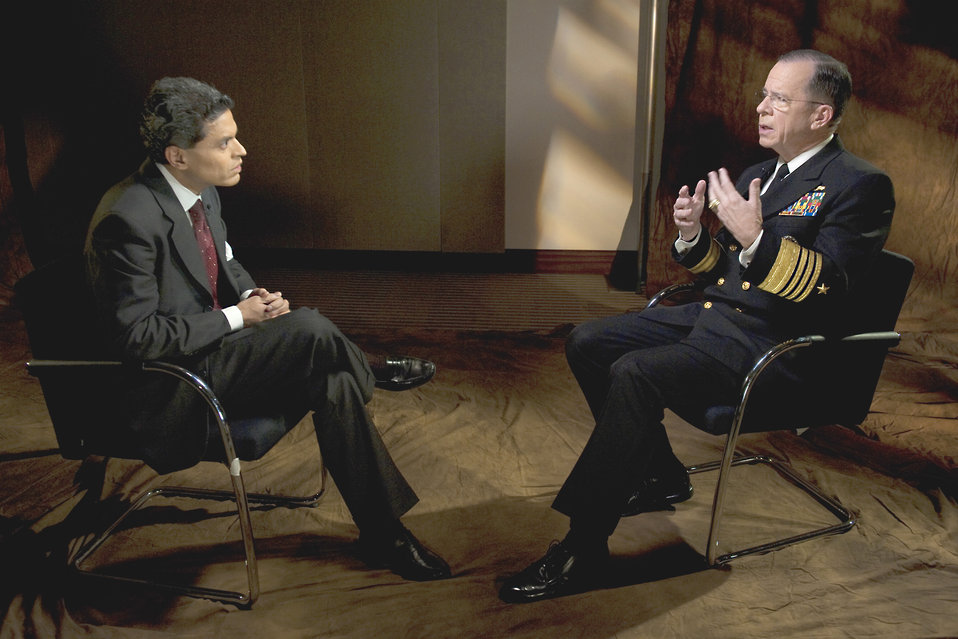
Adm Mullen

CNN's Fareed Zakaria interviews U.S. Navy Adm. Mike Mullen, the Chairman of the Joint Chiefs of Staff, Nov. 24, 2010, in New York City. The program aired Nov. 28.